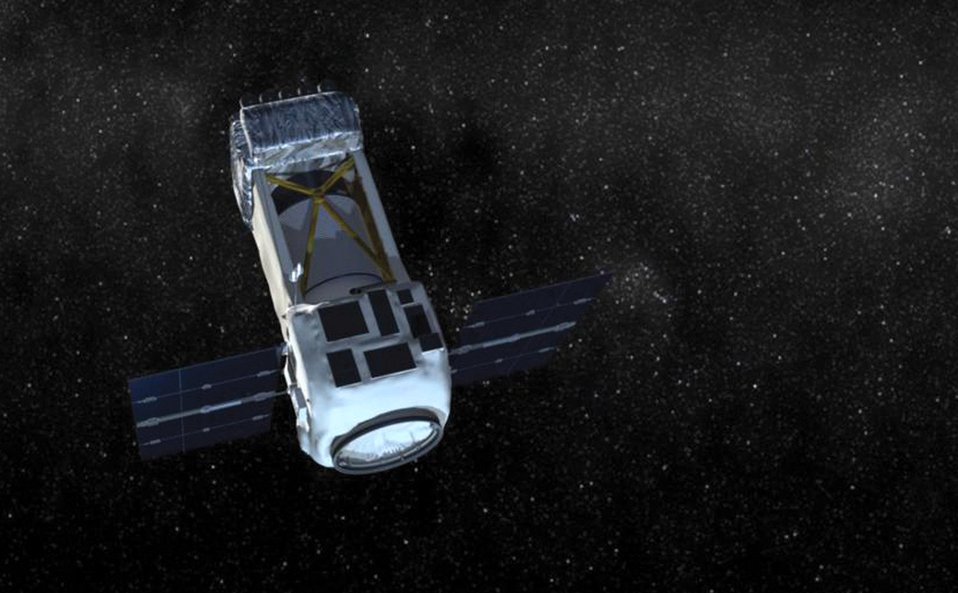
Midcourse Space Experiment

Seen here is an artist's rendition of the Midcourse Space Experiment satellite, launched in 1996 by the Ballistic Missile Defense Organization. The 1st Space Operations Squadron at Schriever Air Force Base, Colo., provided command and control of the satellite from Dec. 4, 1998 until its deactivation June 2, 2008. The Johns Hopkins University Applied Physics Laboratory in Laurel, Md., developed, tested, integrated and launched MSX, operated the satellite's bus and provided technical advisers and system engineers to lend their expertise to MSX's mission.